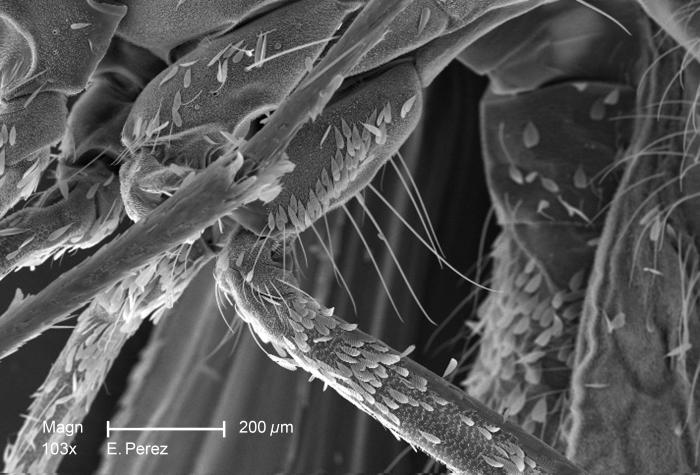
Magnified 103X, this scanning electron micrograph (SEM) revealed some of the minute exoskeletal details found on the surface of what was thought to be an unidentified mosquito discovered in the suburbs of Decatur, Georgia. In this particular view portions of the thoracic and abdominal regions are made visible with this insect's jointed legs in the foreground, emanting from its thoracic region. As a member of the Phylum Arthropoda, i.e., Arthro = 'jointed', and poda 'leg', this insect is supported by a jointed exoskeleton, thereby, facilitating mobility of all of its body parts.